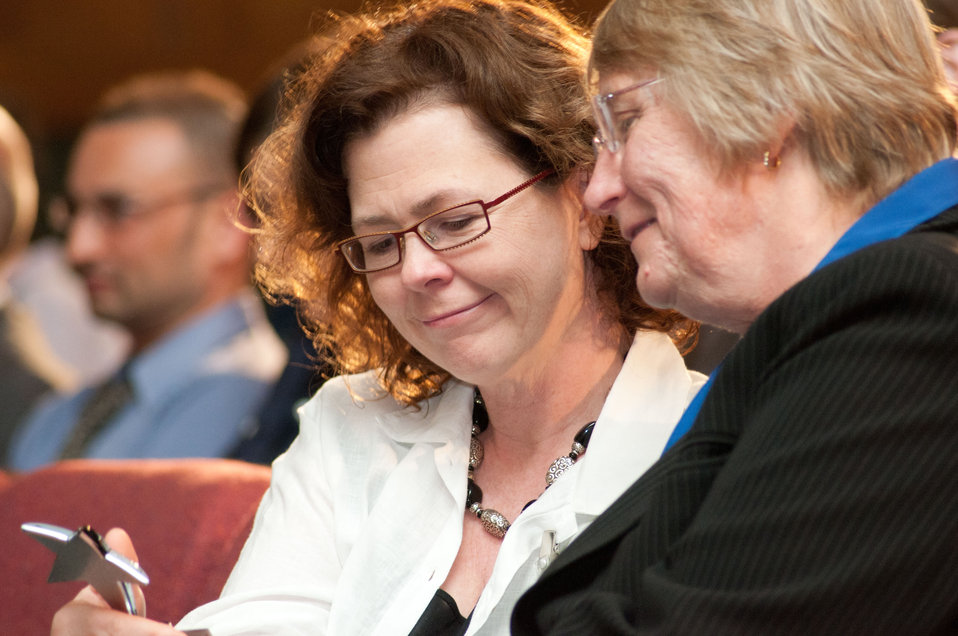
U.S. Department of Agriculture (USDA) Deputy Chief of Staff Carole Jett shows her partner the 2011 USDA GLOBE Award she received during the LGBT Pride Observance Program, on Thursday, June 2, 2011 in the Jefferson Auditorium, Washington, DC.